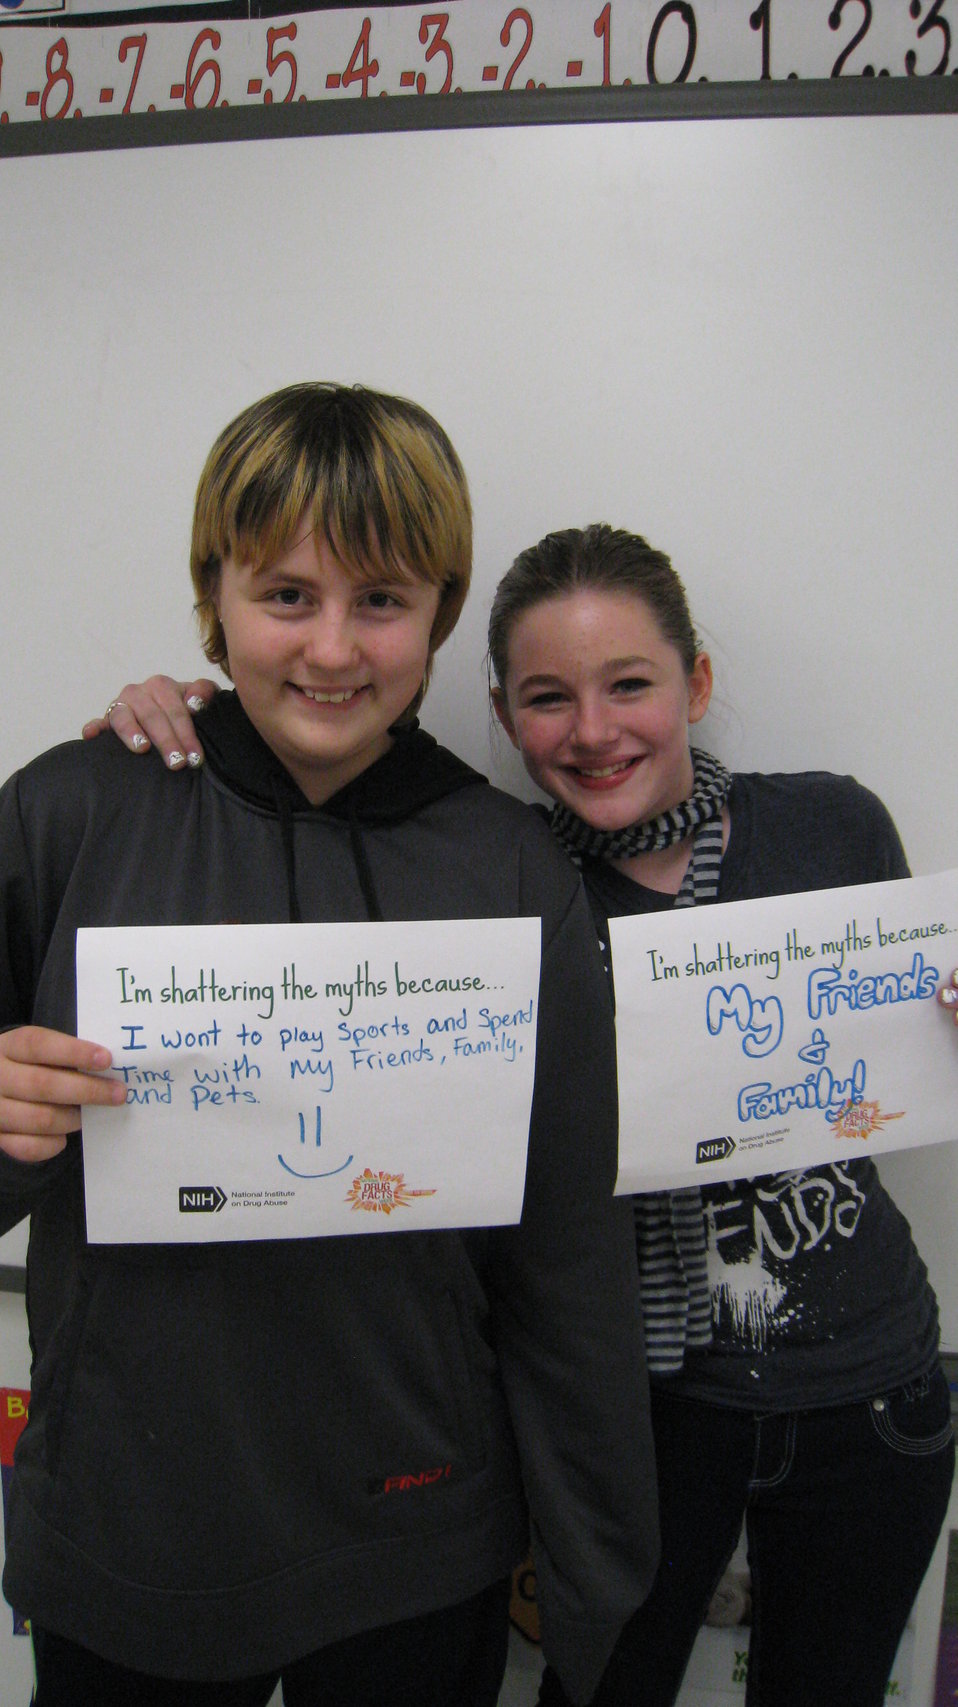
I'm Shattering the Myths Because...

Teenagers from the Van Buren County SAFE Coalition's, Youth Leadership Council (YLC) in Keosauqua, Iowa participate in various events during National Drug Facts Week, 2014.